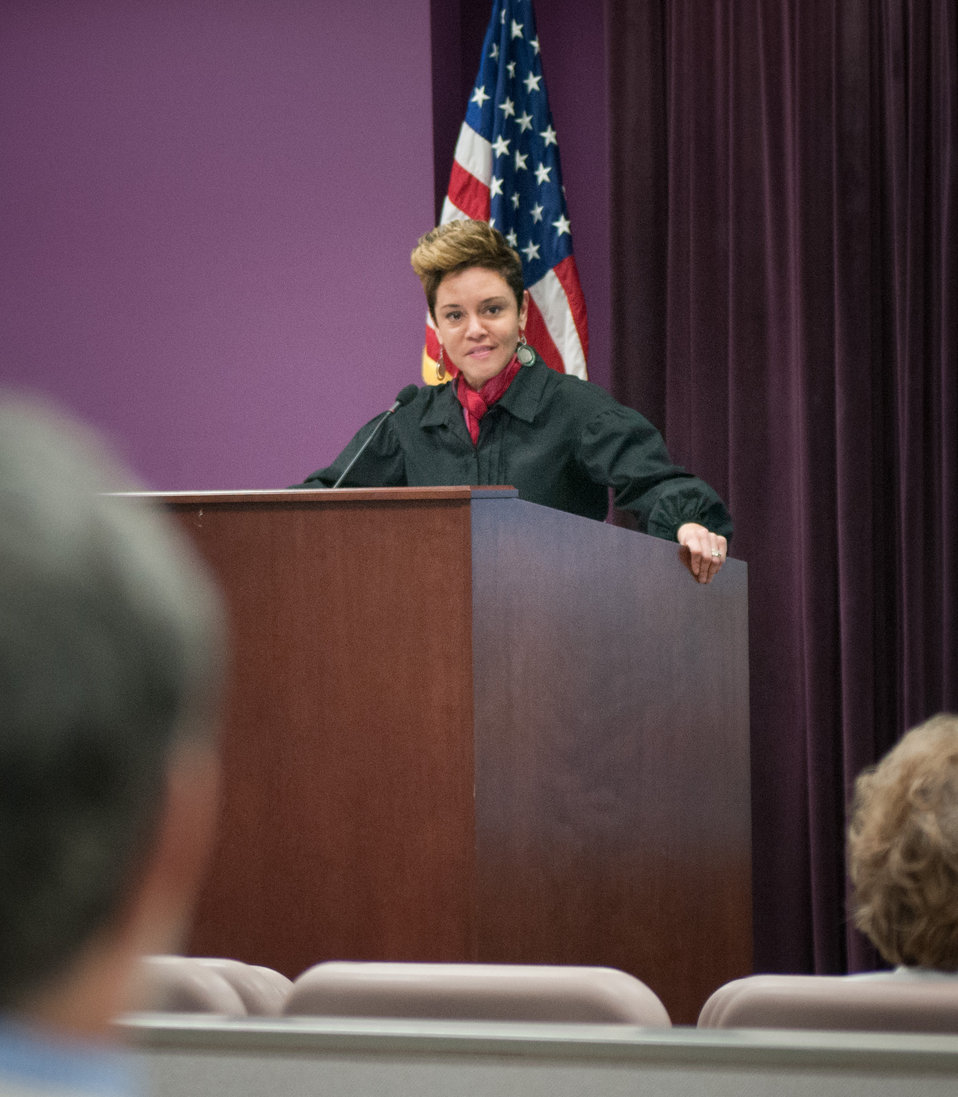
Virginia State University (VSU) School of Agriculture Dean Dr. Jewel E. Hairston was the keynote speaker for the 'VSU, U.S. Department of Agriculture (USDA) and Virginia Farmers Working Together” outreach workshop in the VSU, L. Douglas Wilder building on Thursday, March 7, 2013, in Petersburg, VA. Her topic was 'Small Farming - Persistence Under Pressure.'